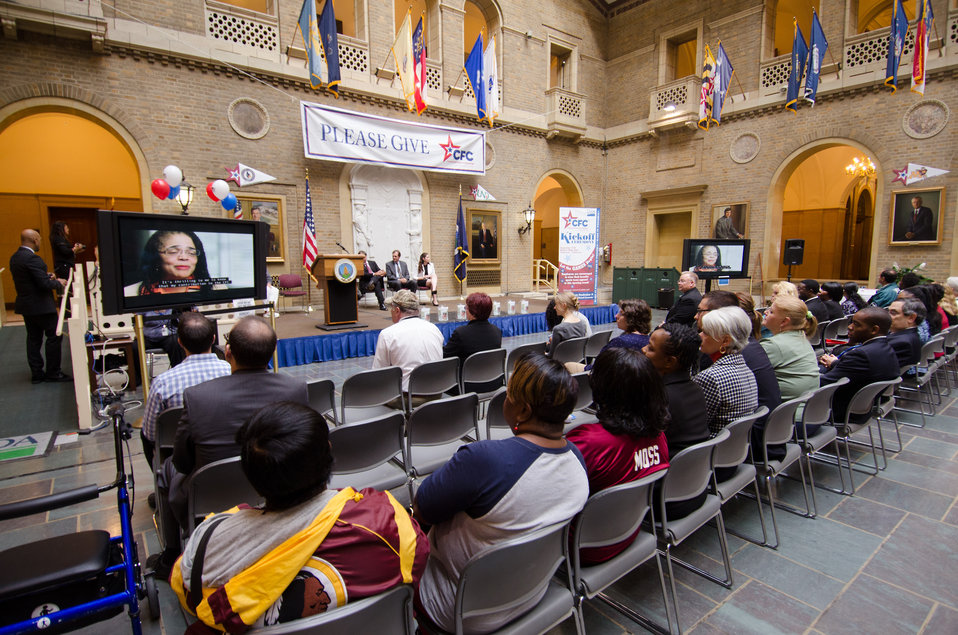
Thr 2013 Combined Federal Campaign video about this year’s theme as “Make it Possible!” is viewed during the opening ceremony and fund raising event on Tuesday, Sept 17, 2013 in the Whitten Building, U.S. Department of Agriculture (USDA), Washington, D.C. Employees took personal time to attend and participate in fund raising activities that generated donations and donation registrations that will help support charities. The Combined Federal Campaign (CFC) is the largest and most successful workplace charitable giving drive in the world. CFC is the only authorized charitable organization solicitation of Federal employees in their workplaces. CFC is structured to support and to promote philanthropy through a voluntary program that is cost-efficient and effective in providing all Federal employees the opportunity to impact the CFC charitable interest of their choosing. For more information about CFC, please see www.usda.gov/wps/portal/usda/usdahome?navid=USDA CFC USDA Photo by Lance Cheung.